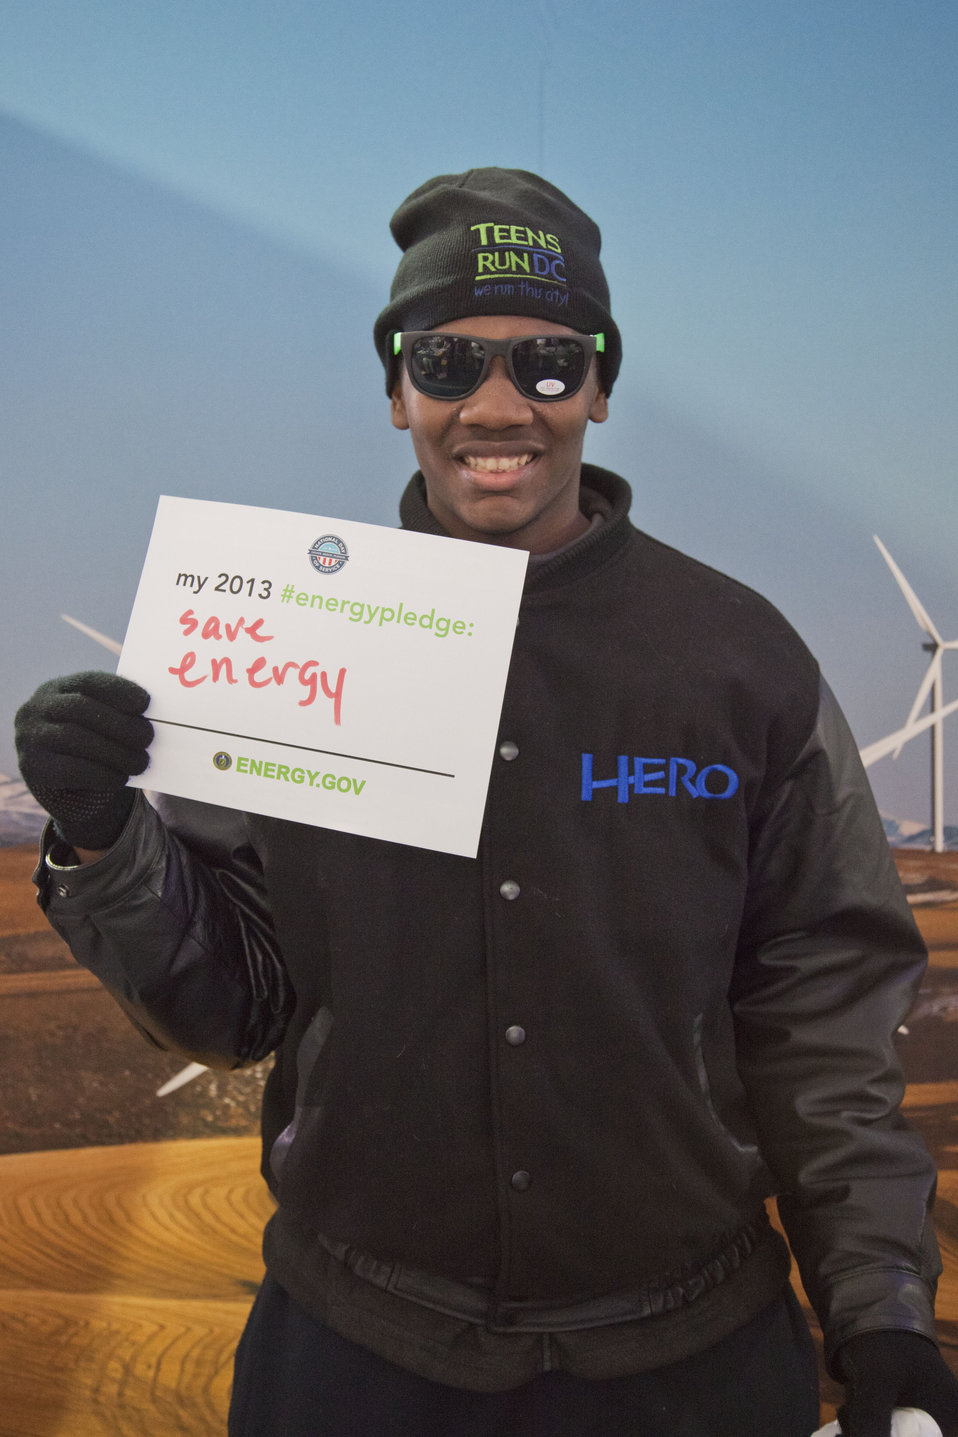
What's your #energypledge?